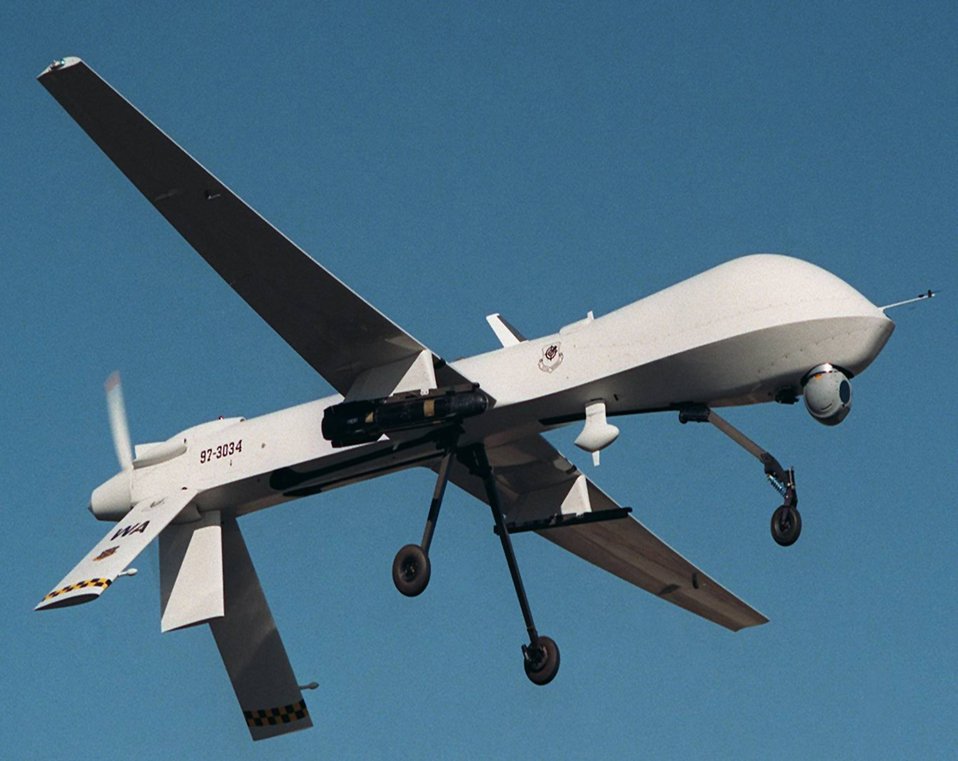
MQ-1 Predator

NELLIS AIR FORCE BASE, Nev. -- An MQ-1 Predator armed with an AGM-114 Hellfire missile flies a training mission. The MQ-1's primary mission is interdiction and conducting armed reconnaissance against critical, perishable targets.